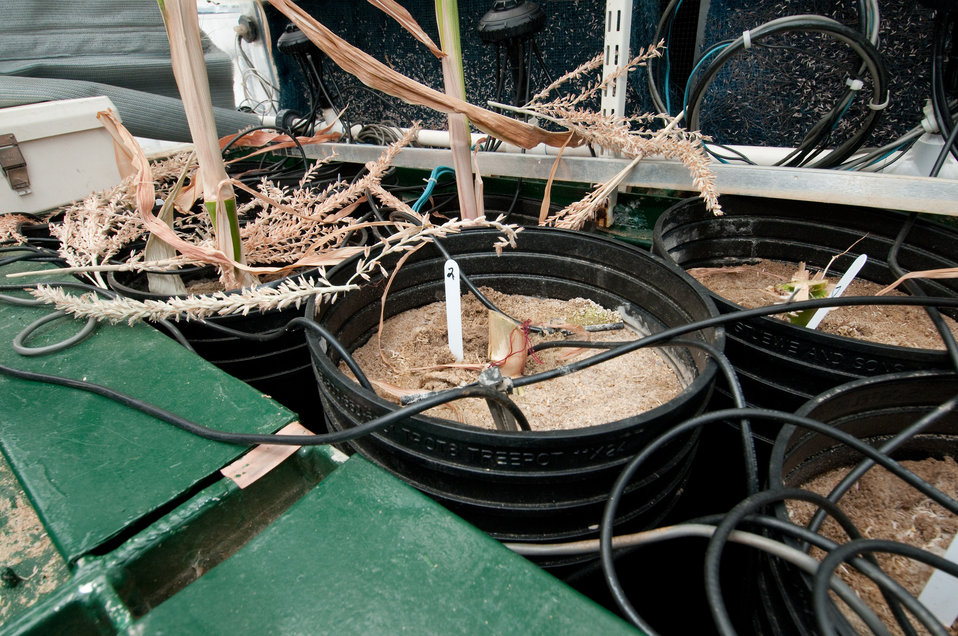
U.S. Department of Agriculture (USDA), Agriculture Research Service's (ARS), Global Climate Change Lab at the ARS facility’s Soil Plant Atmosphere Research (SPAR) units in Beltsville, MD, on Wednesday, September 21, 2011. SPAR units provide precise control of the major environmental variables influencing crop growth including temperature, humidity, and atmospheric carbon dioxide concentration. The SPAR units are fully automated to measure crop canopy gas exchange including photosynthesis, respiration, transpiration and water use efficiency.